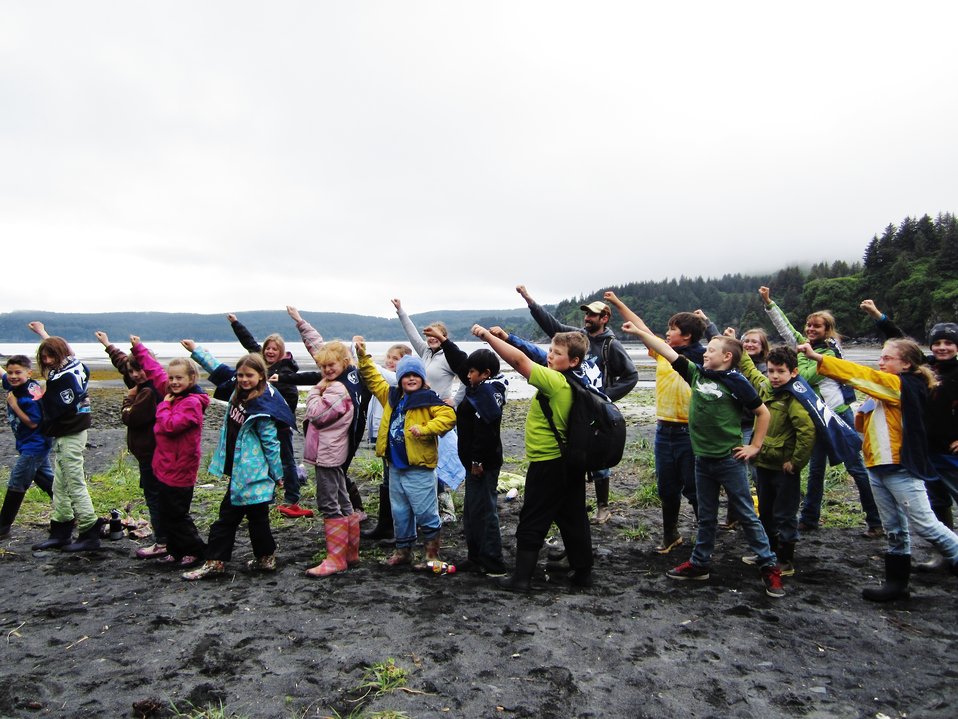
Get Your Goose On! - Alaska Style

Kodiak Refuge Summer and Science Art Camp.

Campers: McKenna Donohue, Bailey Mullen, Solomon Himelbloom, Tymber Bashem, Gage Johnson, Dominic Conol, Anastasia Gauthier, Abigail Groncki, Ashley Cowin, Leslie Spear, Brayden Pfister, Myah Morrison, Dylan Morrison, Olivia Young, Samantha Burnside, Tito Sabangan, Ava Pruitt, Greyson Lincoln. USFWS staff/volunteers: Kristen Riesberg, Ali Sutton, Rory Psotka and Kari Eschenbacher.

Credit: Kari Eschenbacher / USFWS

The Kodiak National Wildlife Refuge is a United States National Wildlife Refuge in the Kodiak Archipelago in southwestern Alaska, United States.

The Kodiak National Wildlife Refuge includes the southwestern two-thirds of Kodiak Island, Uganik Island, the Red Peaks area of Afognak Island and all of Ban Island in the archipelago. It encompasses 1,990,418 acres (8,054.94 km2).[2] The refuge is administered from offices in Kodiak.

The refuge contains seven major rivers and about 100 streams. It is a spawning ground for all six species of Pacific Ocean salmon, trout and several other fish species, as well as a nesting ground for 250 species of bird, many of which feed on salmon. The refuge has only six native species of mammals: Kodiak brown bear, red fox, river otter, ermine, little brown bat and tundra vole. The non-native mammals Sitka deer, mountain goat, Roosevelt elk, snowshoe hare and beaver were introduced to the archipelago between the 1920s and 1950s and are now hunted and trapped.

The climate of the refuge is that of southern Alaska, mild and rainy. Many areas in the refuge are densely forested with Sitka Spruce at lower elevations. There are grasslands in drier areas and at higher elevations. The refuge contains several small glaciers.